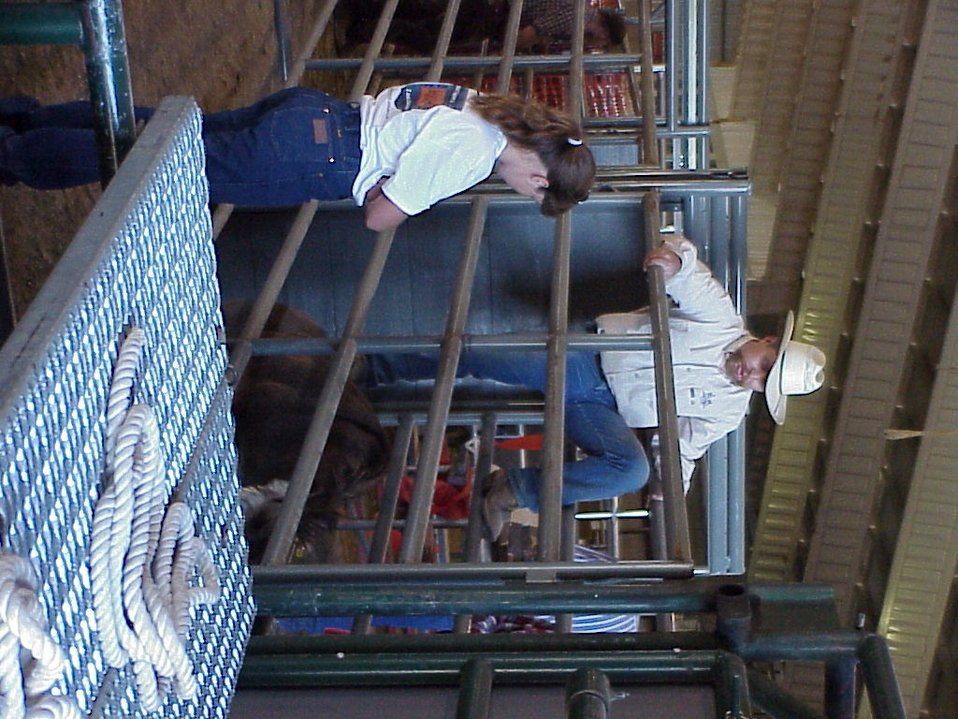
Lewiston Wild Horse and Burro Adoption Program Auction WHB indoor auction Cottonwood Field Office UCSC Upper Columbia Salmon Clearwater District